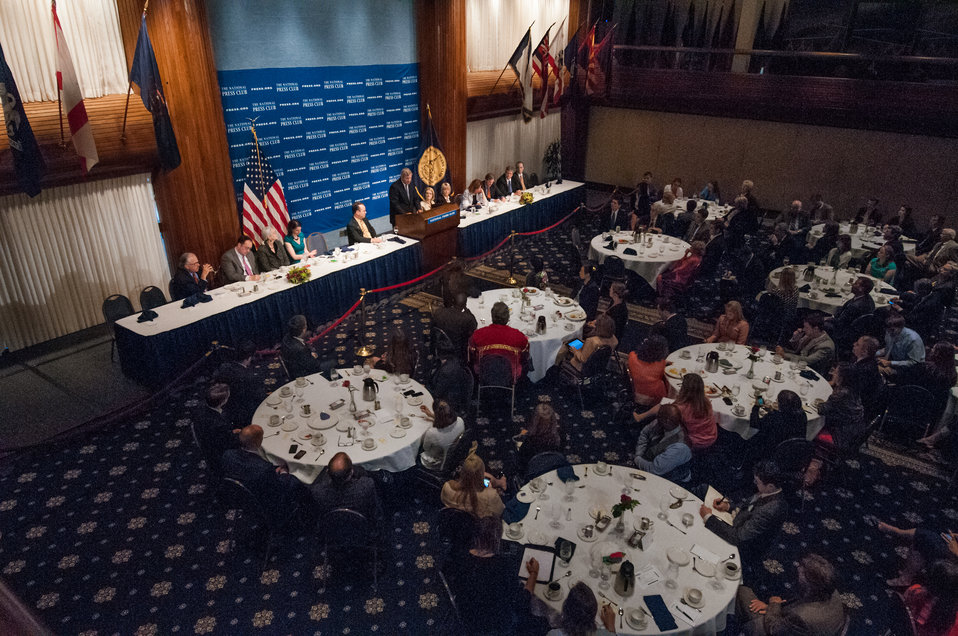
Agriculture Secretary Tom Vilsack discusses the vision for the U.S. Department of Agriculture’s (USDA) future efforts to assist America to adapt to modern environmental challenges at the National Press Club in Washington, D.C. on Wednesday Jun. 5, 2013.